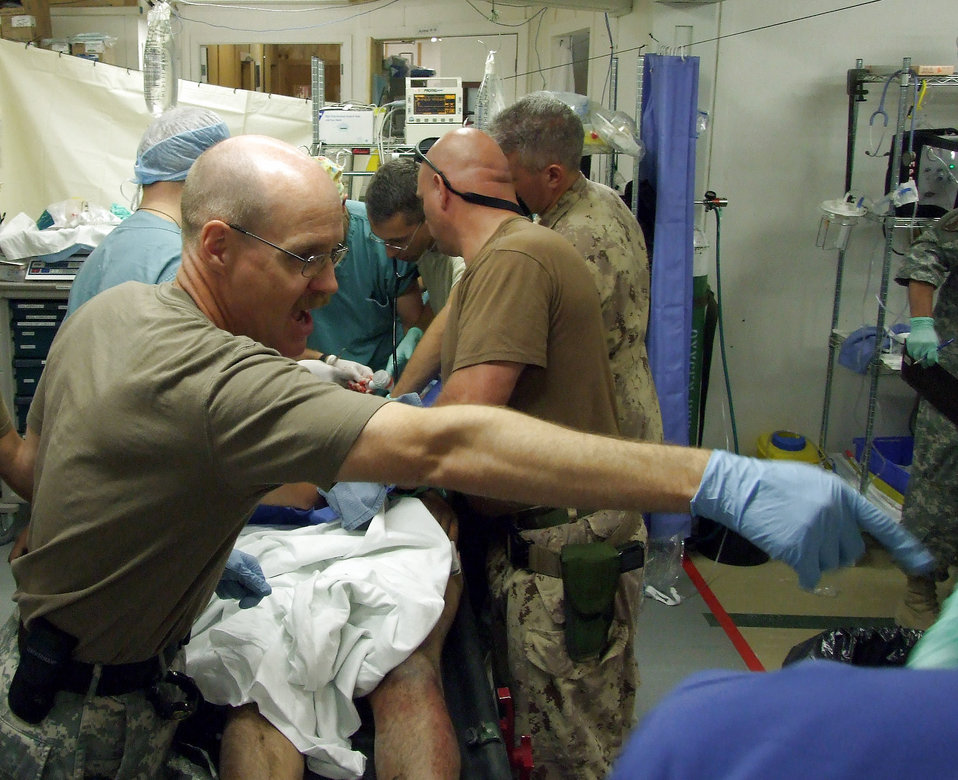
Radiology commander receives Canadian award

Col. (Dr.) Thomas Seay (left) assists with a trauma Sept. 1 at the Role 3 Multinational Medical Unit at Kandahar Air Field in Afghanistan. Colonel Seay was recently awarded the Canadian Meritorious Service Medal for outstanding service while deployed to the hospital. Colonel Seay is the 59th Radiology Squadron commander at Wilford Hall Medical Center, Lackland Air Force Base, Texas.